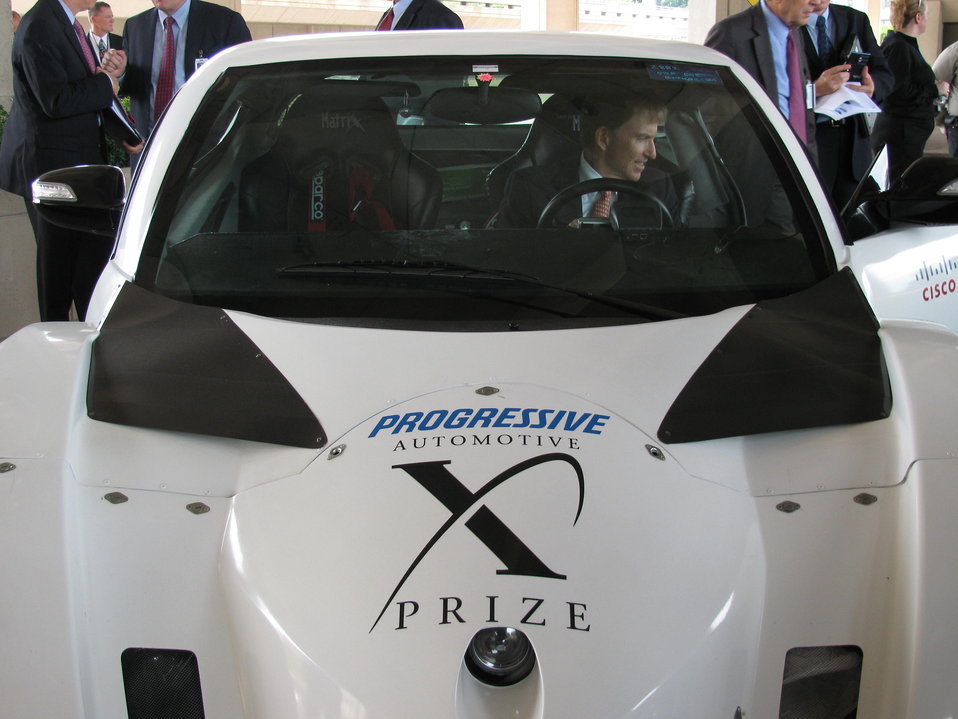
X Prize 057